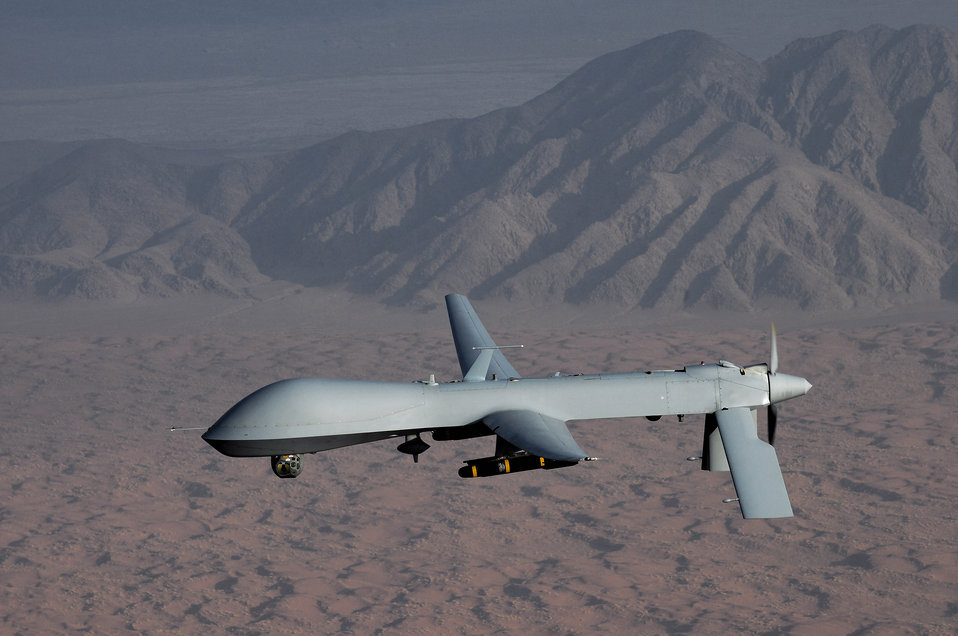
ISR operations: Eye in the sky

Air Force officials are seeking volunteers for future training classes to produce operators of the MQ-1 Predator unmanned aircraft.